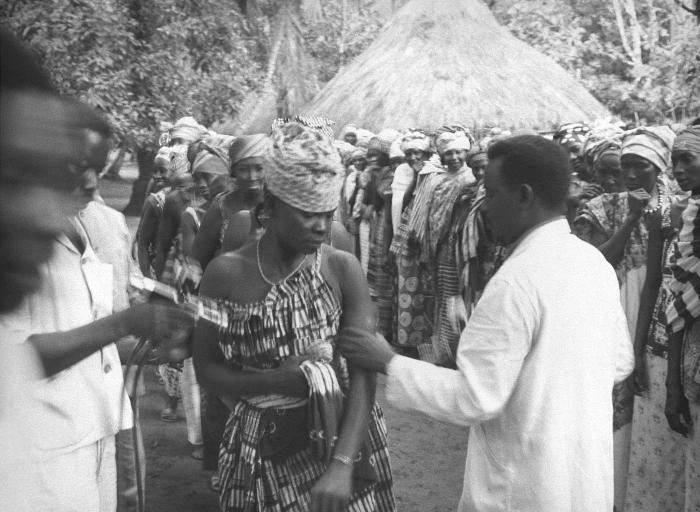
This Nigerian woman is receiving a smallpox vaccination during the WHO Smallpox Eradication Project, 1968.